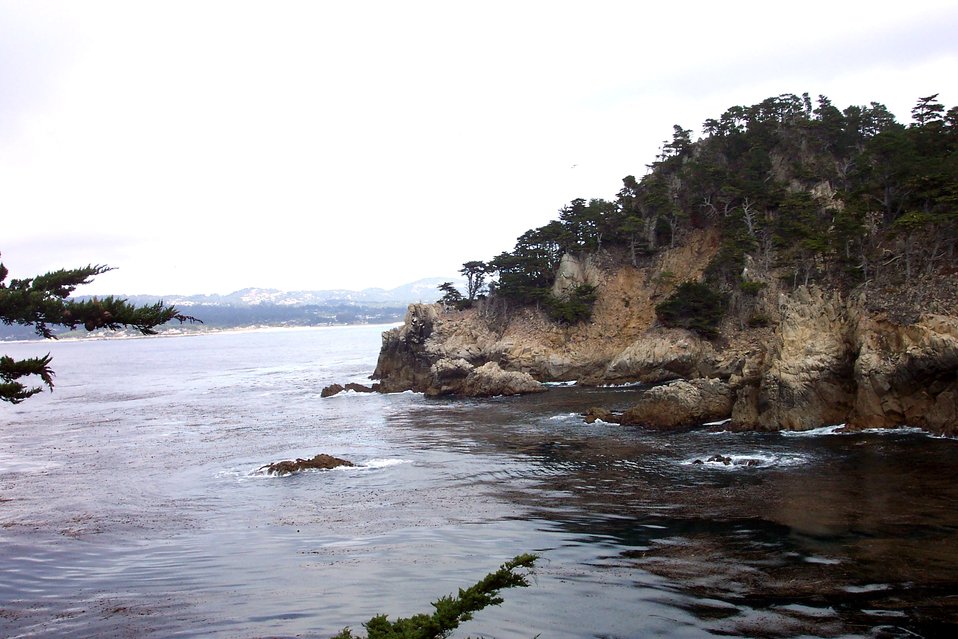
Monterey cypress on a rocky headland on the north side of Point Lobos. Looking towards Carmel Bay and the Santa Lucia Mountains.